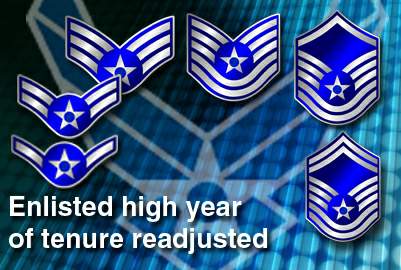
Air Force returns enlisted high year of tenure to standards

Air Force manpower and personnel officials announced Jan. 27, 2010, a return of enlisted high year of tenure limits to their pre-2003 levels. The change will initially affect approximately 2,500 Airmen; 500 senior airmen, 400 technical sergeants, 1,200 master sergeants and 400 senior master sergeants. The HYT for senior master sergeant, master sergeant, technical sergeant and senior airman will return to 26, 24, 22 and 10 years, respectively. The HYT limits for both chief master sergeant (30 years) and staff sergeant will remain the same since they were not raised in 2003.